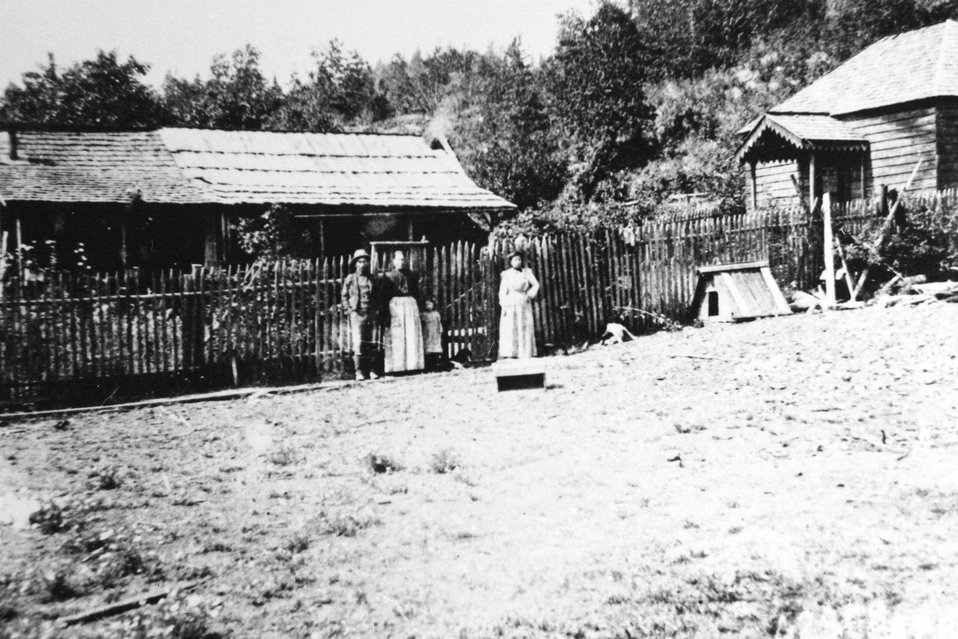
Jake Fry Family at Ullahe.